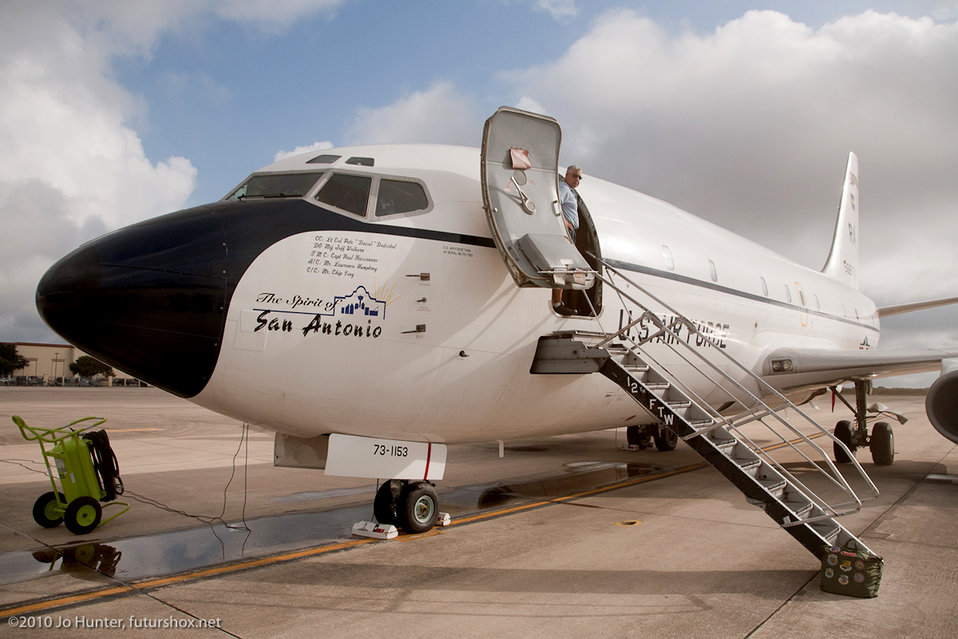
T-43 retirement

A T-43 awaits takeoff Sept. 1, 2010, on the flightline at Randolph Air Force Base, Texas. The T-43, a combat systems officer training aircraft since 1973, was officially retired Sept. 17, 2010.